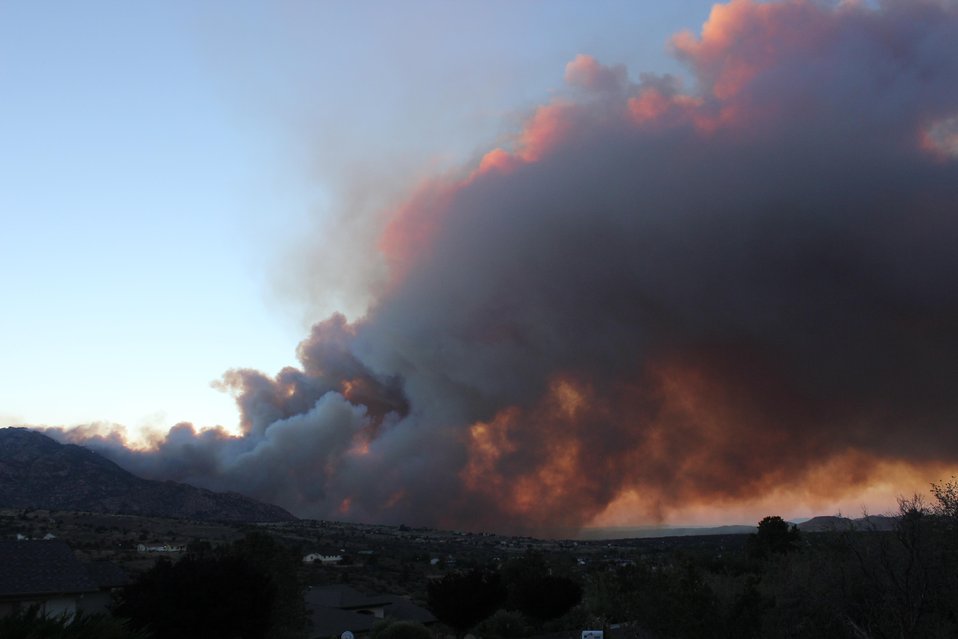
The Doce Fire (pronounced 'Dough-see') is located approximately 8 miles northwest of Prescott, AZ near Granite Mountain Recreation Area began on Jun. 18, 2013 by human interference. The fire has consumed approximately 6, 732 acres.